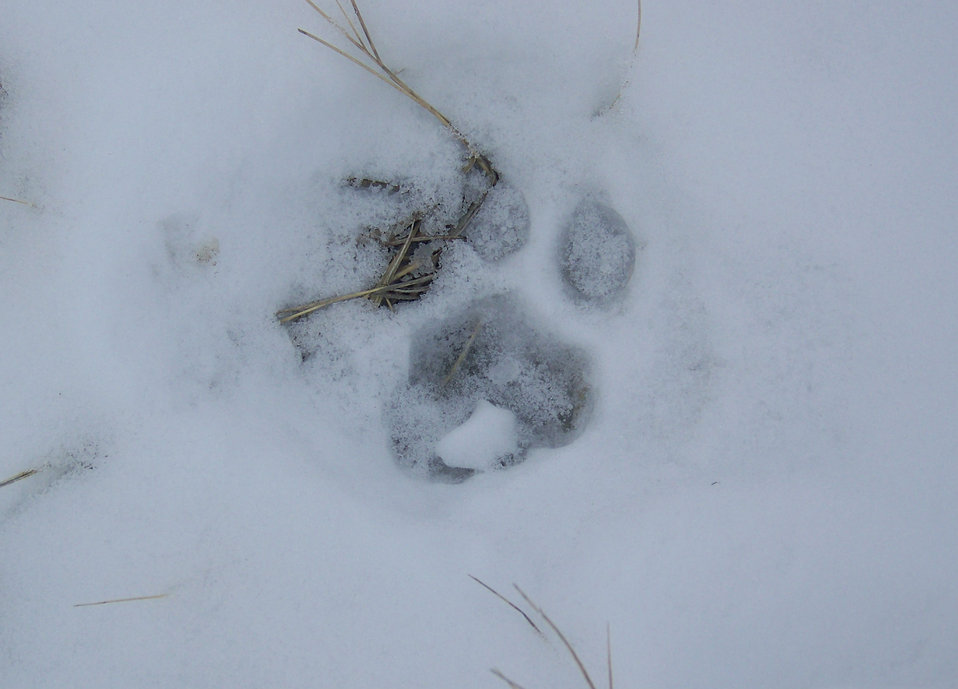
Mountain Lion Track

Snow makes it easier to tracks mountain lions for a study on Charles M. Russell National Wildlife Refuge.